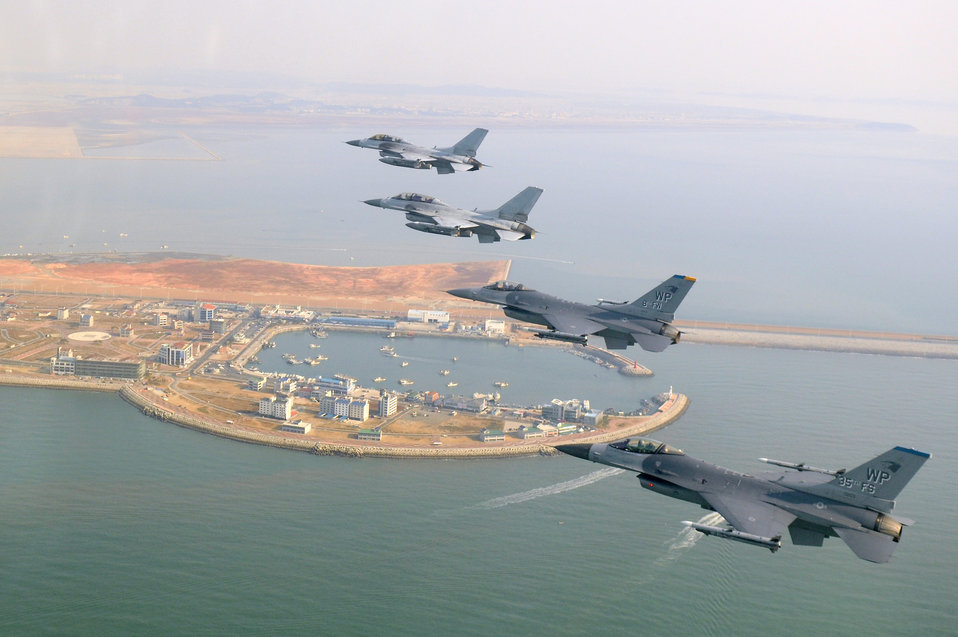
Korean War anniversary

Four F-16 Fighting Falcons fly during a U.S. and South Korean air force coalition flight Nov. 10, 2010, over the Piung Harbor, South Korea. The flight was in celebration of the 60th anniversary of the Korean War.